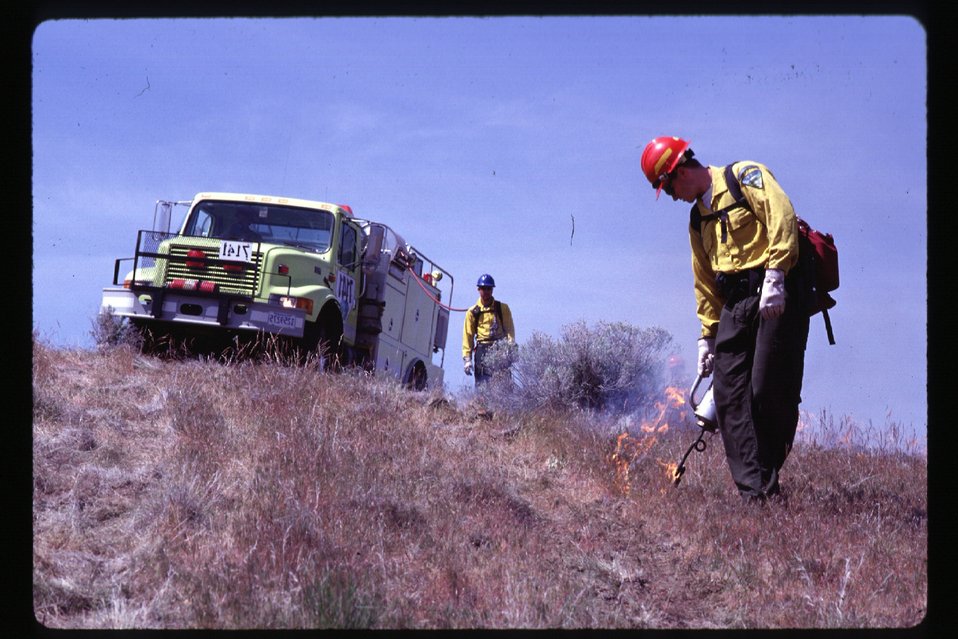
Prescribed burn Four Rivers Field Office LSRD Lower Snake River District